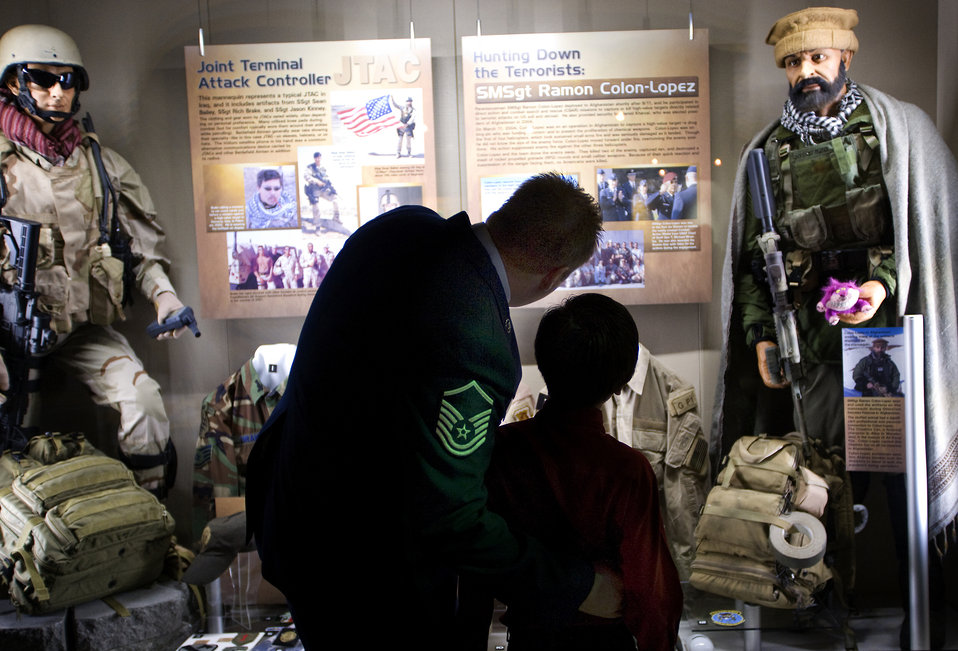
Museum opens exhibit dedicated to 'Warrior Airmen'

Master Sgt. Keary Miller shows his son, Ian, equipment used by special operations Airmen during the war on terrorism at the opening of the Warrior Airman Exhibit Jan. 12 at the Nation Museum of the U.S. Air Force at Wright-Patterson Air Force Base, Ohio. Sergeant Miller, a pararescuman honored in the Warrior Airmen Exhibit , fought during the Battle of Takur Ghar, the deadliest entanglement of Operation Anaconda in Afghanistan.